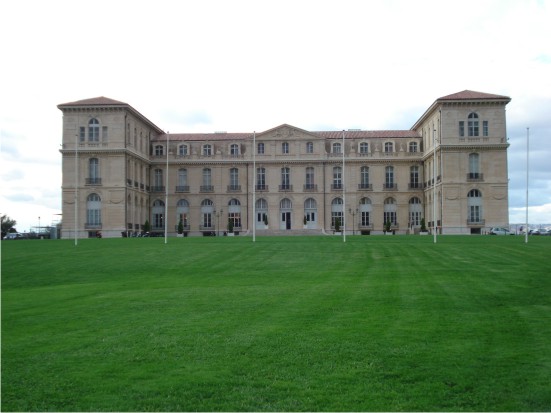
Български: Дворецът Фаро, Марсилия Français†: Palais du Pharo